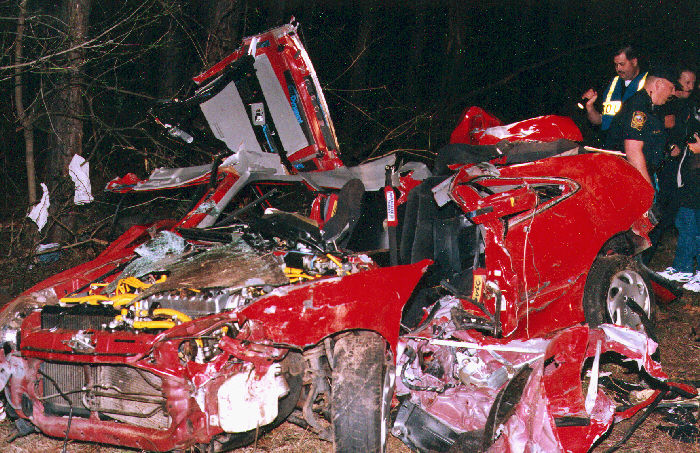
Wrecked car in which three teenagers died.